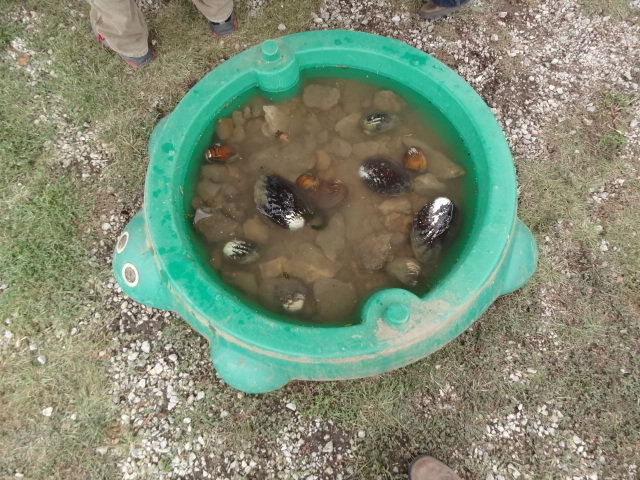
Touch Tank with Mussels